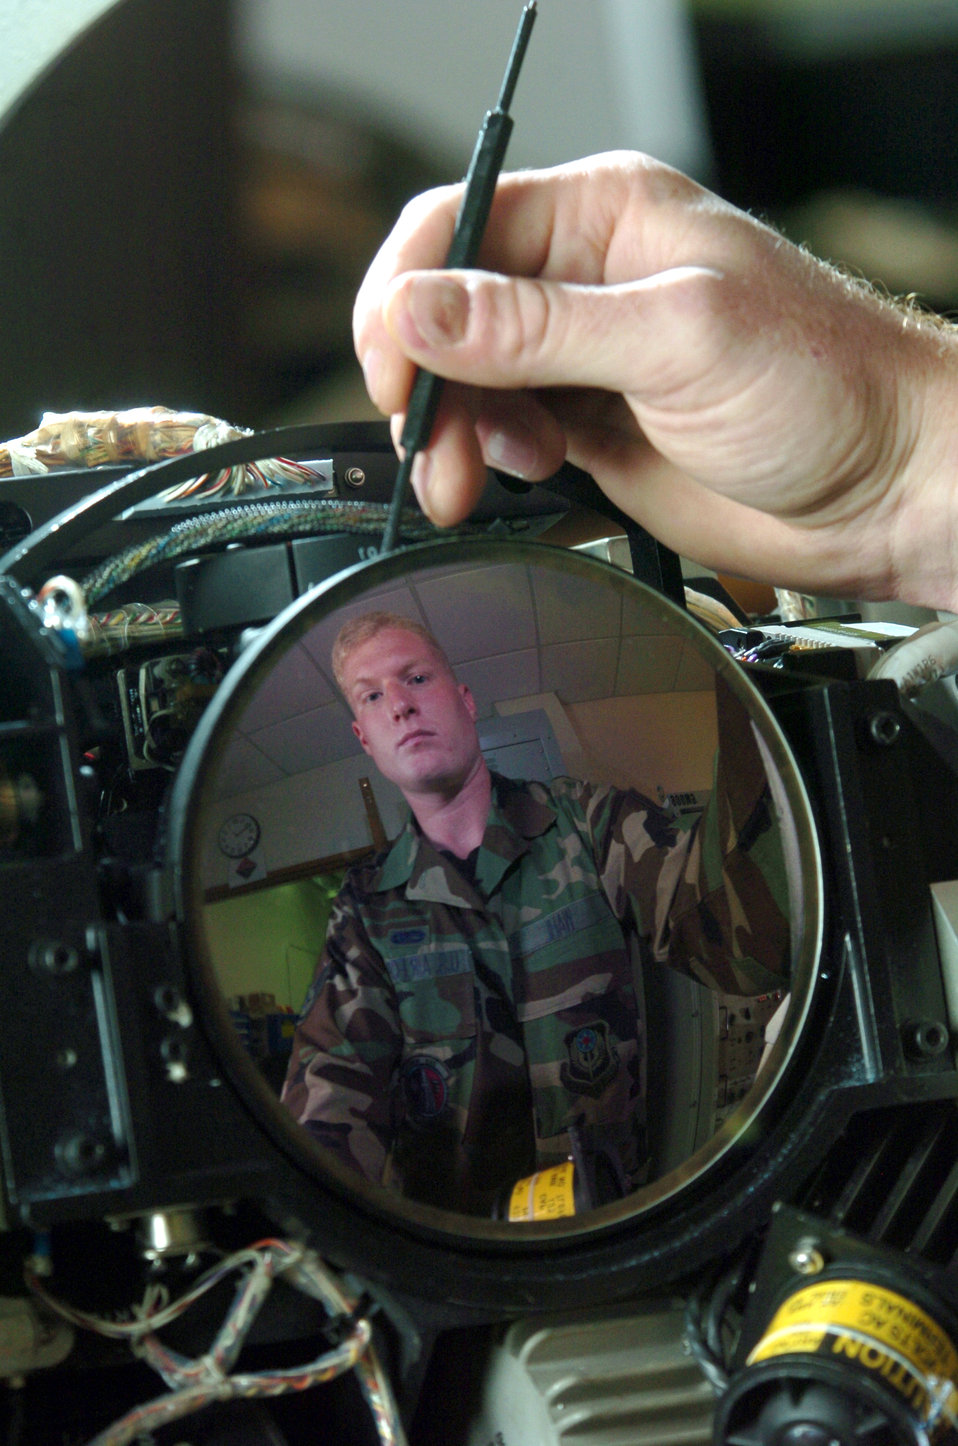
Kadena special ops maintainers team up on tiny troubles

KADENA AIR BASE, Japan -- Staff Sgt. Ehren Wahl's image reflects on an MC-130 infrared receiver lens during an inspection here. The 353rd Maintenance Squadron Airmen provide maintenance for all MC-130 Combat Talons and Combat Shadows assigned to the 353rd Special Operations Group. Sergeant Wahl is a communications navigation mission systems technician.